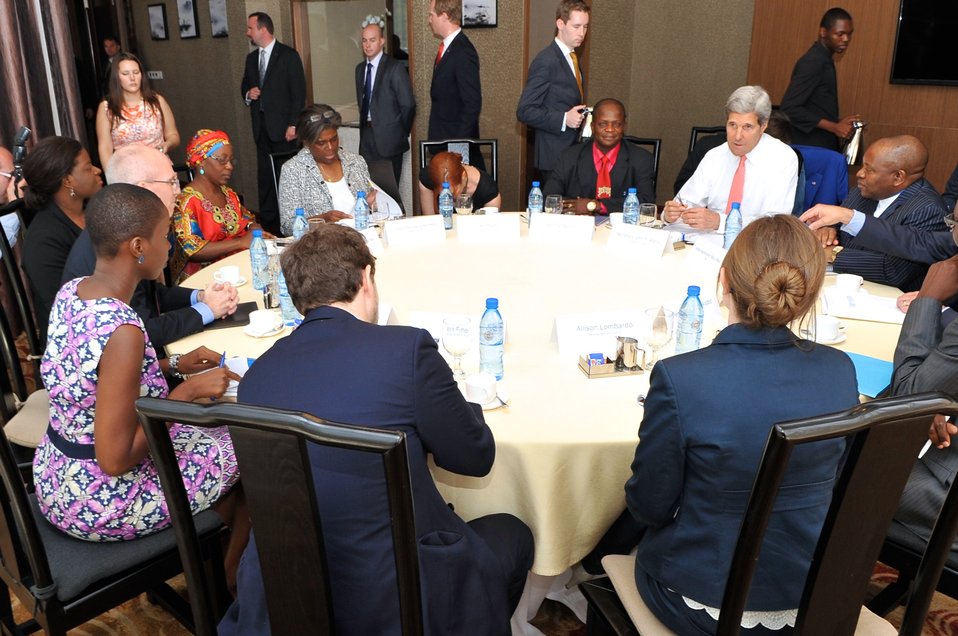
Secretary Kerry Kerry Meets With Elections Activists in Democratic Republic of Congo

U.S. Secretary of State John Kerry holds a roundtable discussion with activists concerned about democracy and fair elections in the Democratic Republic of Congo before a meeting in Kinshasa on May 4, 2014.